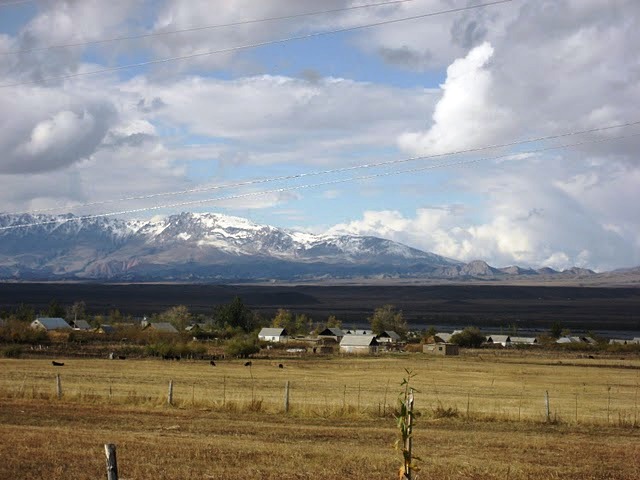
U.S. Embassy Bishkek Officers Travel Kyrgyzstan To Observe Elections

Foreign Service Officers from U.S. Embassy Bishkek travel Kyrgyzstan to observe polling stations and monitor the political and security situation in Kyrgyzstan in October 2010.